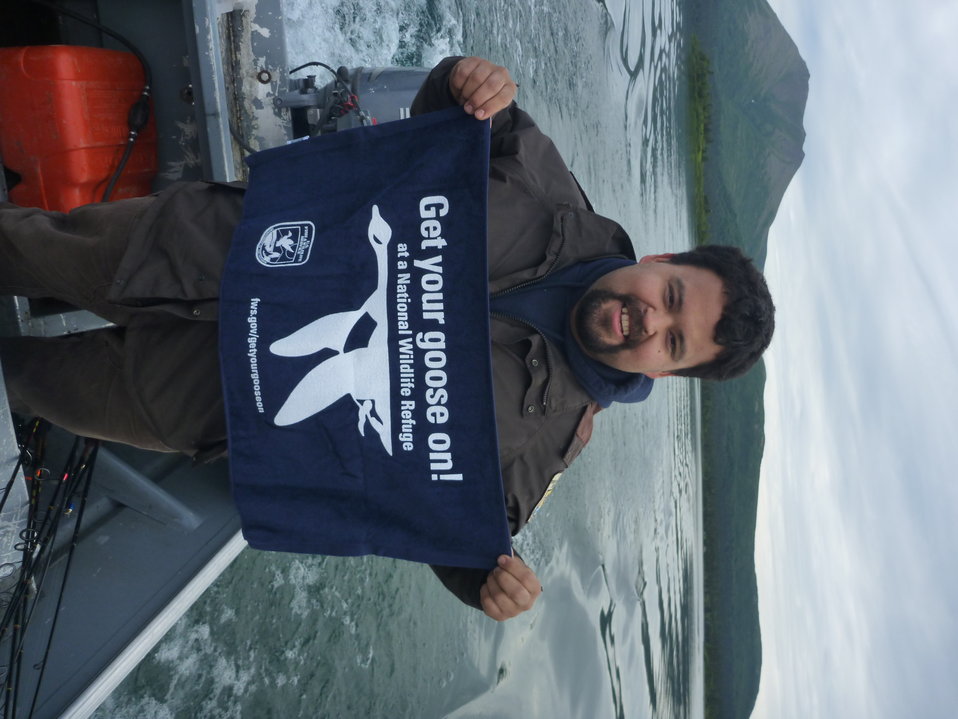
GYGO! - Alaska Style!

These youngsters Get Their Goose On! at Togiak National Wildlife Refuge in southwest Alaska.

The refuge supports 35 species of fish, 30 species of terrestrial mammals, 17 species of marine mammals, and 201 bird species.